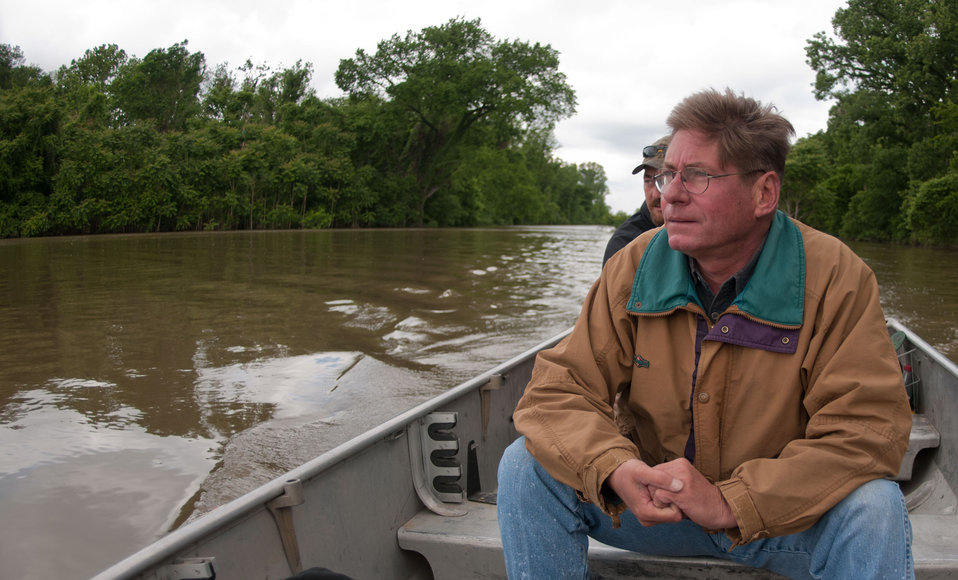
Joe Higdon (right) and Lee Tacito travel by boat to Mr. Higdon's ranch on President's Island is still submerged under 6-12 feet of Mississippi River waters near Memphis, TN, on Sunday, May 15. 2011.